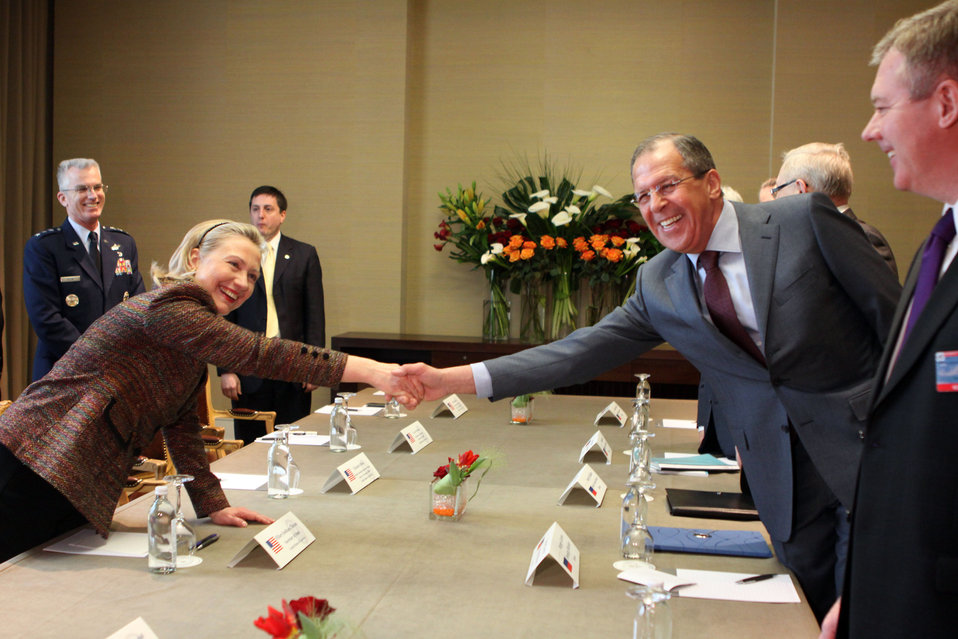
Secretary Clinton Shakes Hands With Russian Foreign Minister Lavrov

U.S. Secretary of State Hillary Rodham Clinton shakes hands with Russian Foreign Minister Sergey Lavrov before a bilateral meeting at the Intercontinental Hotel in Geneva, Switzerland, on February 28, 2011.